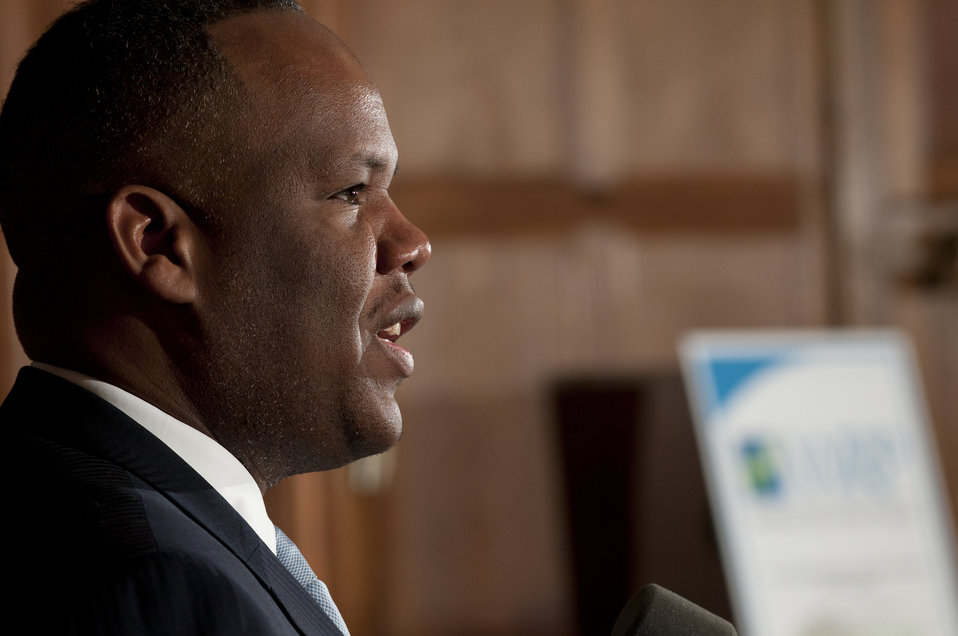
Kareem Dale, Special Assistant to the President on Disability Policy addresses the Work Force Recruitment Program’s (WRP) 'Your Key To Hiring Student Interns and Employees with Disabilities” event hosted by the United States Department of Agriculture (USDA) in the Jefferson Auditorium, Washington, D.C. on Tuesday, February 7, 2012.